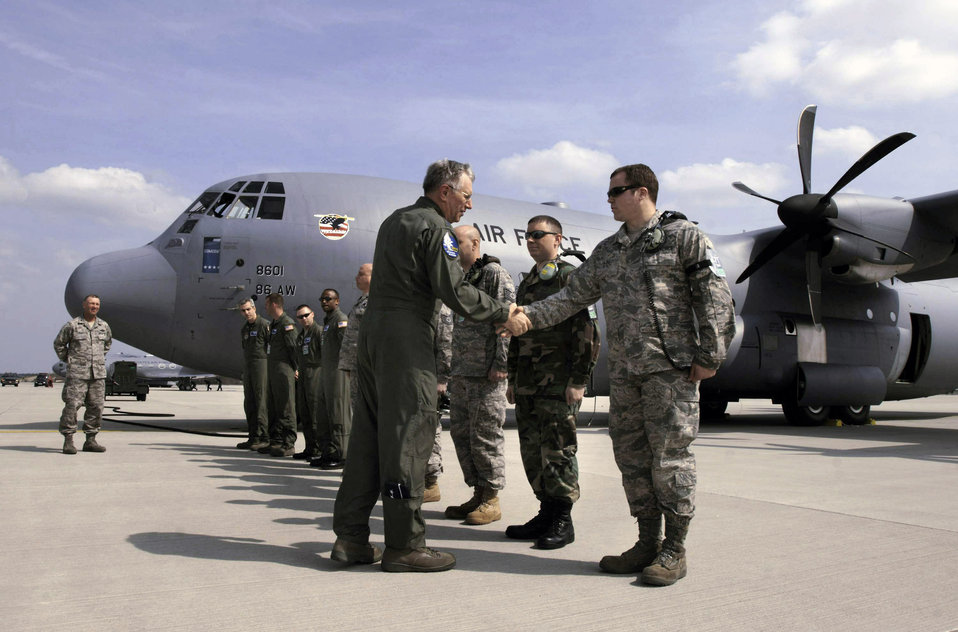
Ramstein welcomes new J-model C-130

Prior to flying the C-130J Super Hercules sitting on the ramp at Spangdahlem Air Base, Germany, on the last leg of its trans-Atlantic journey from the aircraft assembly plant in Marietta, Ga., to its new home at Ramstein AB, Germany, Gen. Roger A. Brady, U.S. Air Forces in Europe commander, greets Staff Sgt. William Lau and fellow C-130J aircraft maintainers, pilots and load masters. General Brady flew the J-model from Spangdahlem to Ramstein.